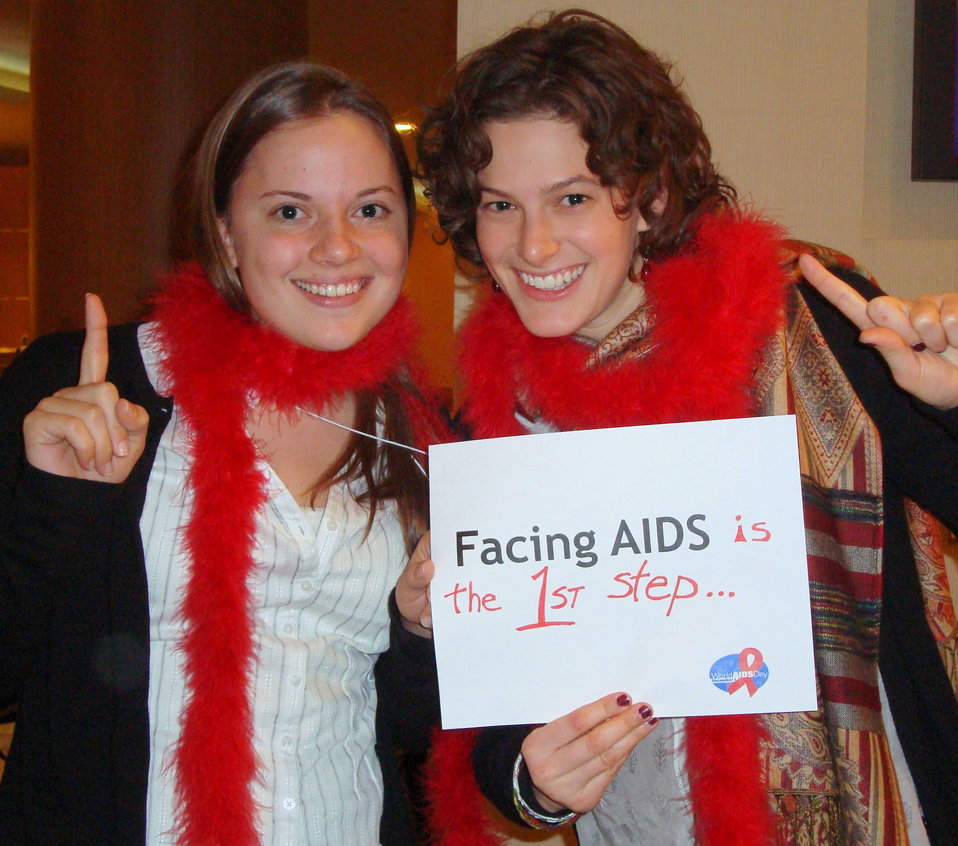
FacingAIDSCampaign 022